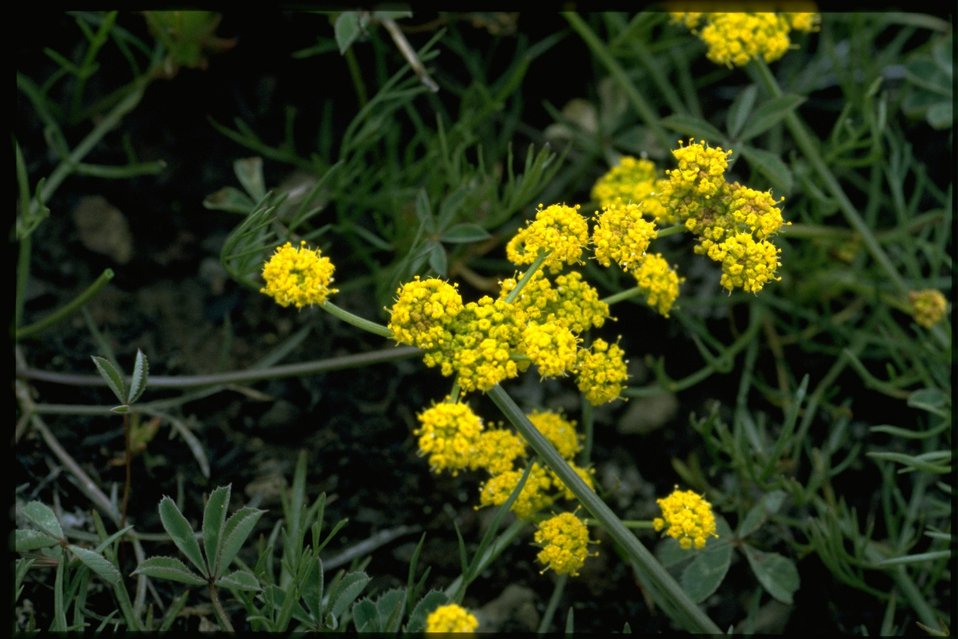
Medium shot of Nineleaf Lomatium, Lomatium Triternatum, wildflowers.